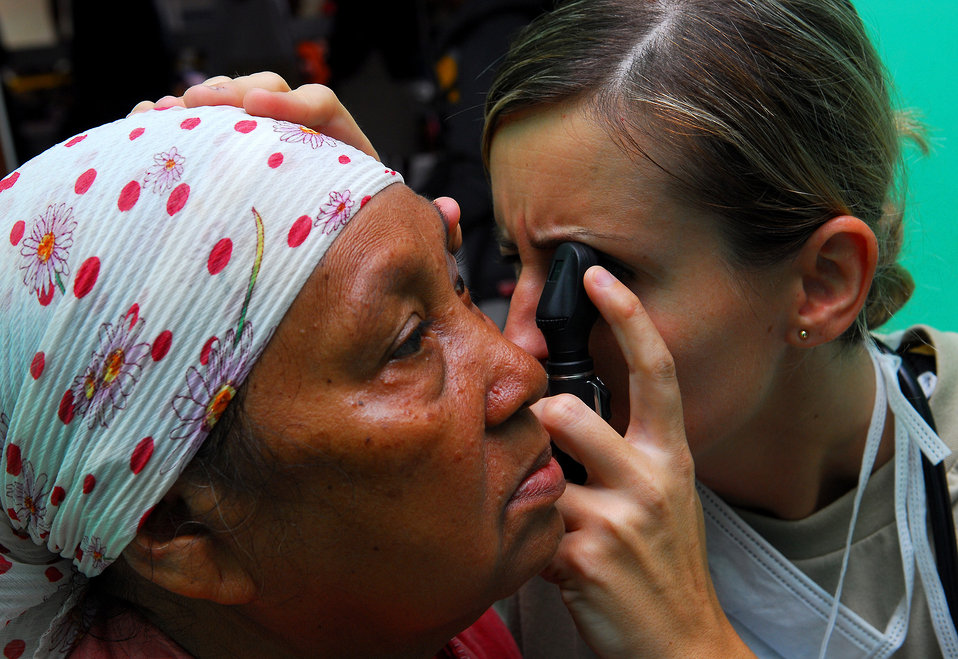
Air Force Capt. Tavalone Examines a Patient’s Eye

Air Force Capt. Natasha Tavalone examines a patient’s eye during a medical civic action program in Sulamadaha, Indonesia, on July 20, 2010. The Military Sealift Command hospital ship USNS Mercy (T-AH 19) is in the North Maluku Islands conducting Pacific Partnership 2010, the fifth in a series of annual U.S. Pacific Fleet endeavors conducted in Indonesia as a disaster relief exercise aimed at strengthening regional partnerships.